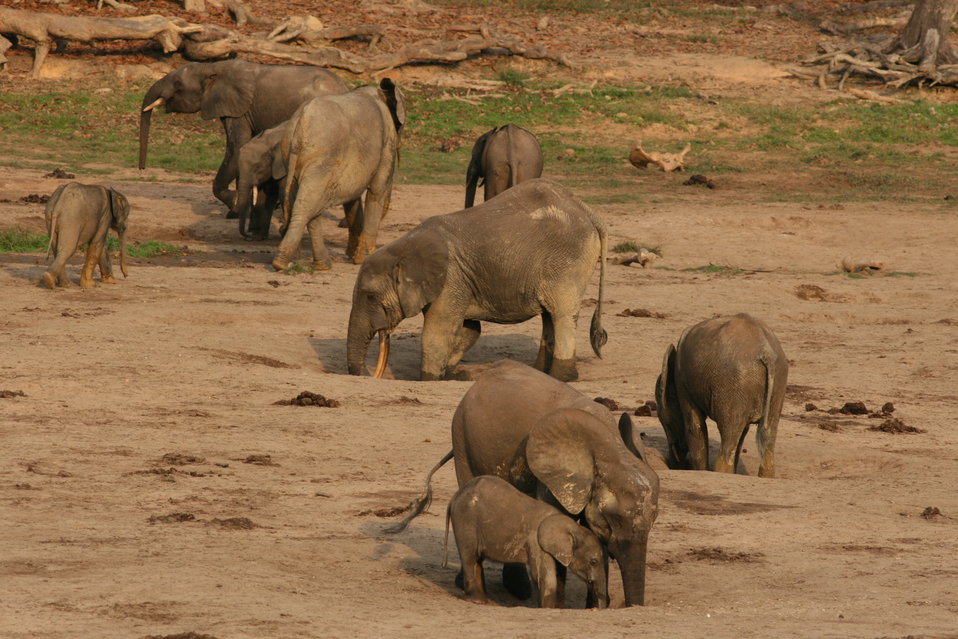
Forest elephant group 2

Elephants digging for minerals to eat.